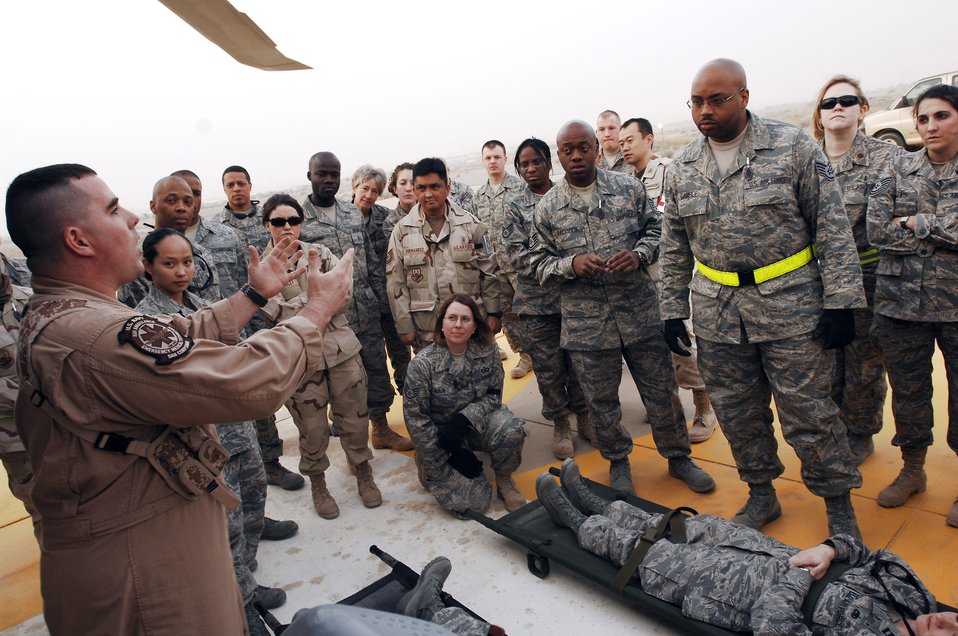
Who is on your team?

Members from the 386th Expeditionary Medical Group, Navy and Japan Air Self-Defense Force came together for joint training Feb. 18 at a Southwest Asia air base. The joint training familiarizes medics on the loading and extracting techniques of patients for medical evacuation missions so members of each service can work together as a team in providing patients the best possible care.